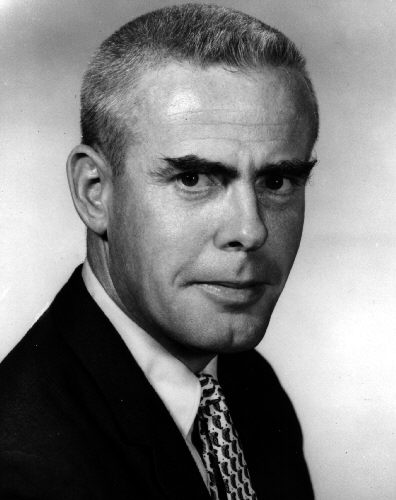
James L. Goddard, M.D., M.P.H., CDC Chief